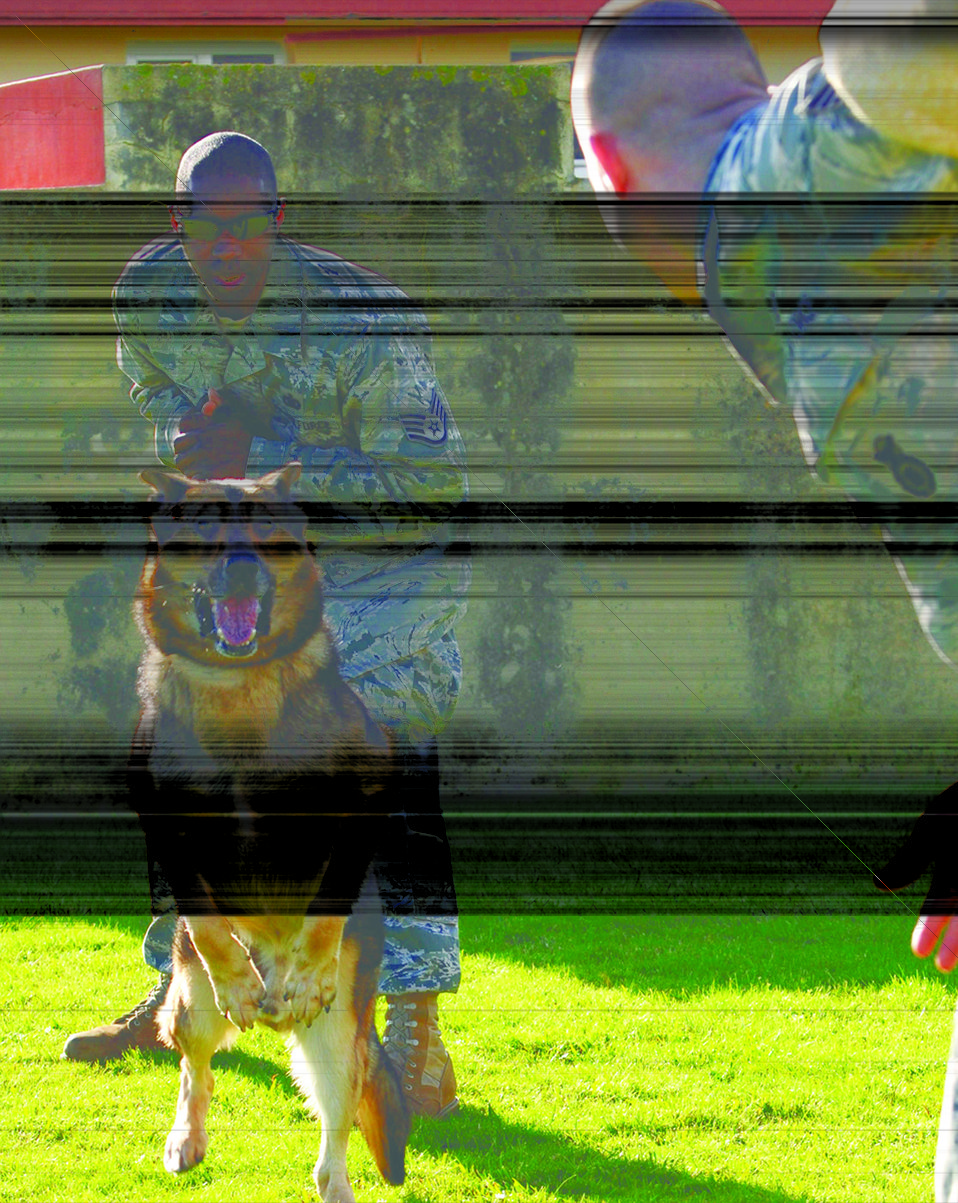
Woof

Staff Sgts. Jerald Harris (handling the dog) and Curtis Locke train Dan, a military working dog, Jan. 21, 2011, at Lajes Field, Azores. Sergeants Harris and Locke are assigned to the 65th Security Forces Squadron. Sergeant Locke is a kennel master and trainer, while Sergeant Harris is a K-9 handler.